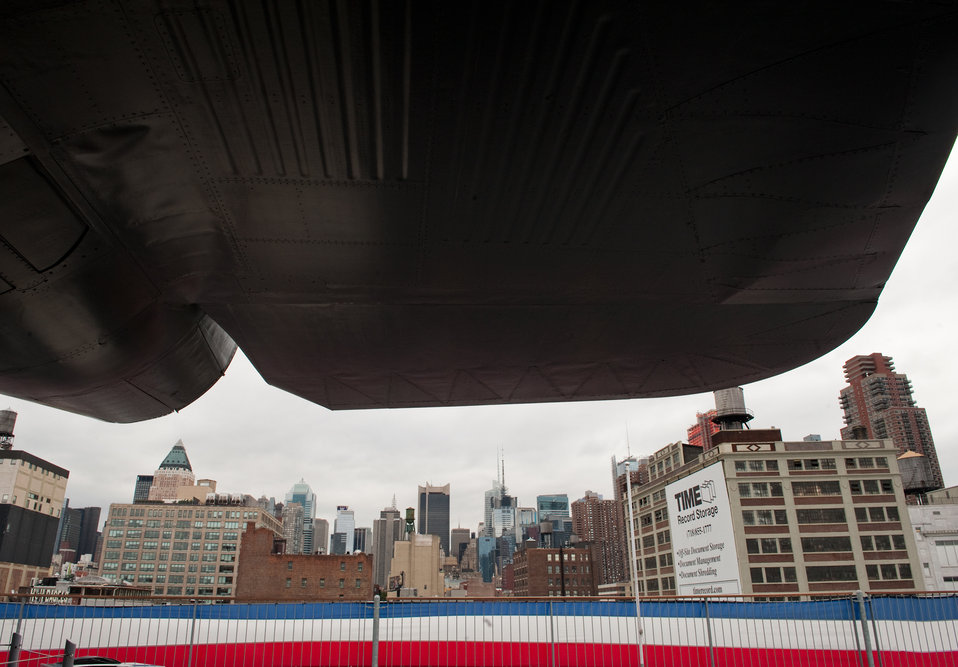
Air Force Week New York City Proclamation Ceremony

New York City view from under the wing of an A-12 on display on the flight deck during the Air Force Week New York City proclamation ceremony at the USS Intrepid on Aug. 24, 2010. The event at the Intrepid Sea, Air & Space Museum was highlighted by a six-ship flyover by the USAF Thunderbirds. The Honorable Michael Donley, Secretary of the Air Force attended, along with General Raymond Johns, Commander of Air Mobility Command. The Police Commissioner of the City of New York, the Honorable Raymond Kelly, represented NYC. Mr. Greg Kelly of